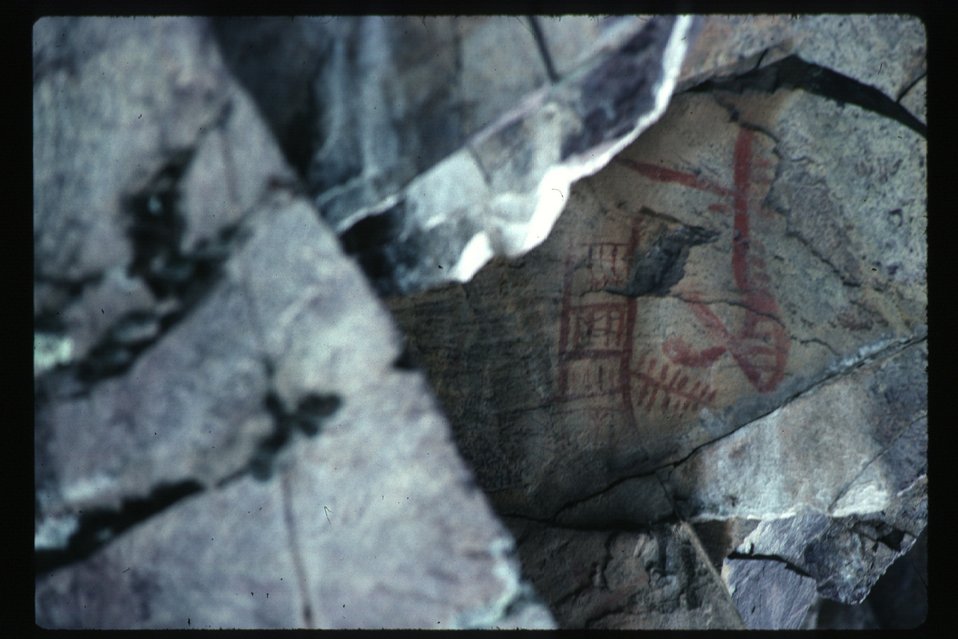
Petroglyphs Lower Salmon River Cottonwood Field Office UCSC Upper Columbia Salmon Clearwater District